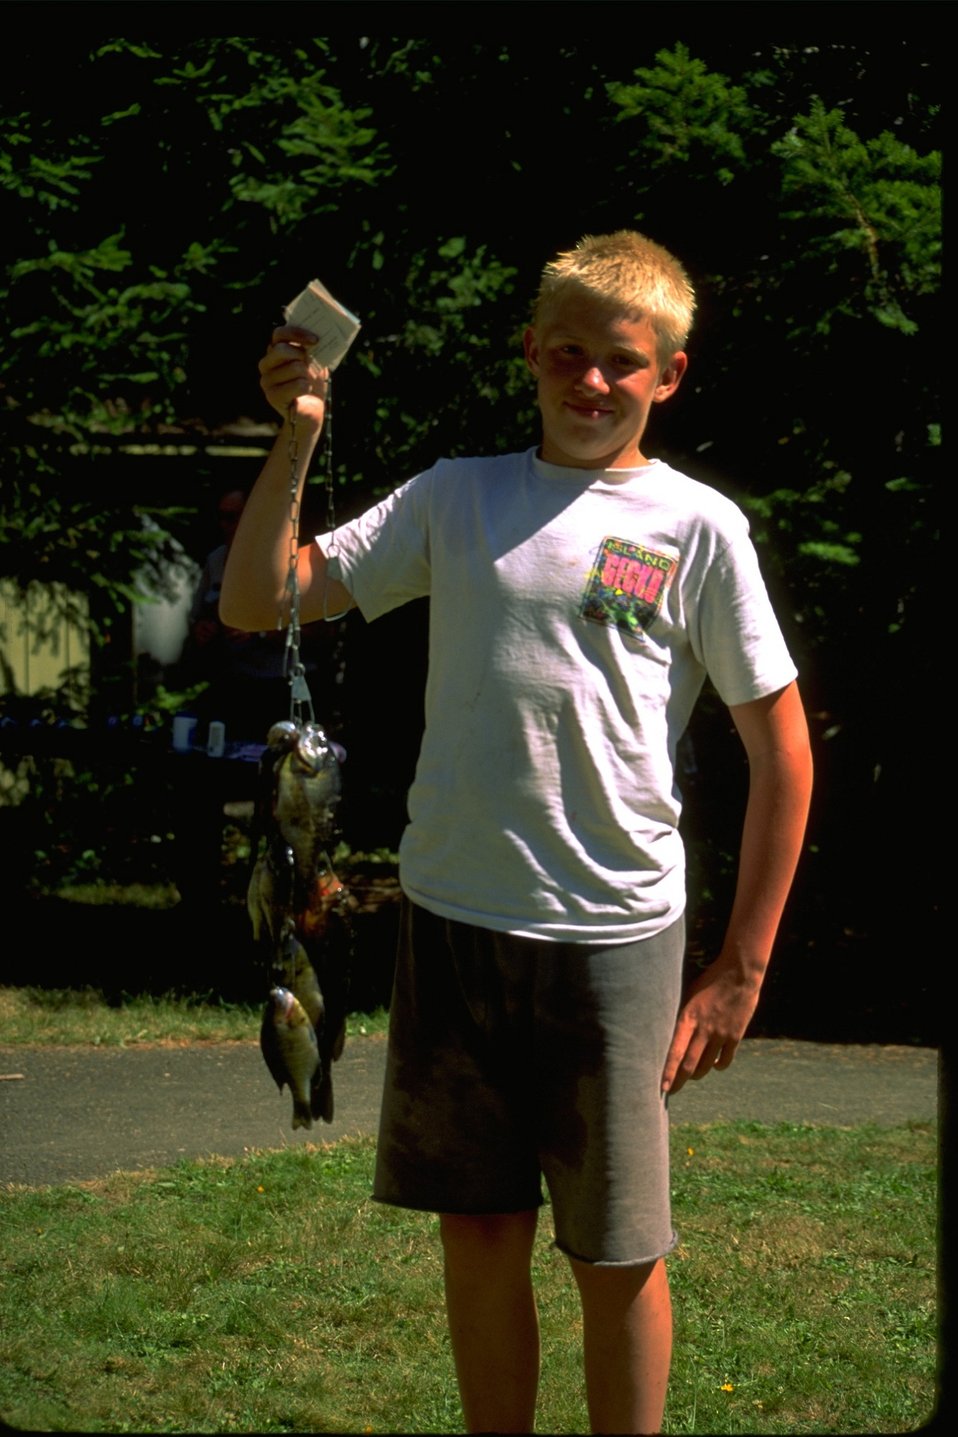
Look Lake fishing derby: boy holding fish.